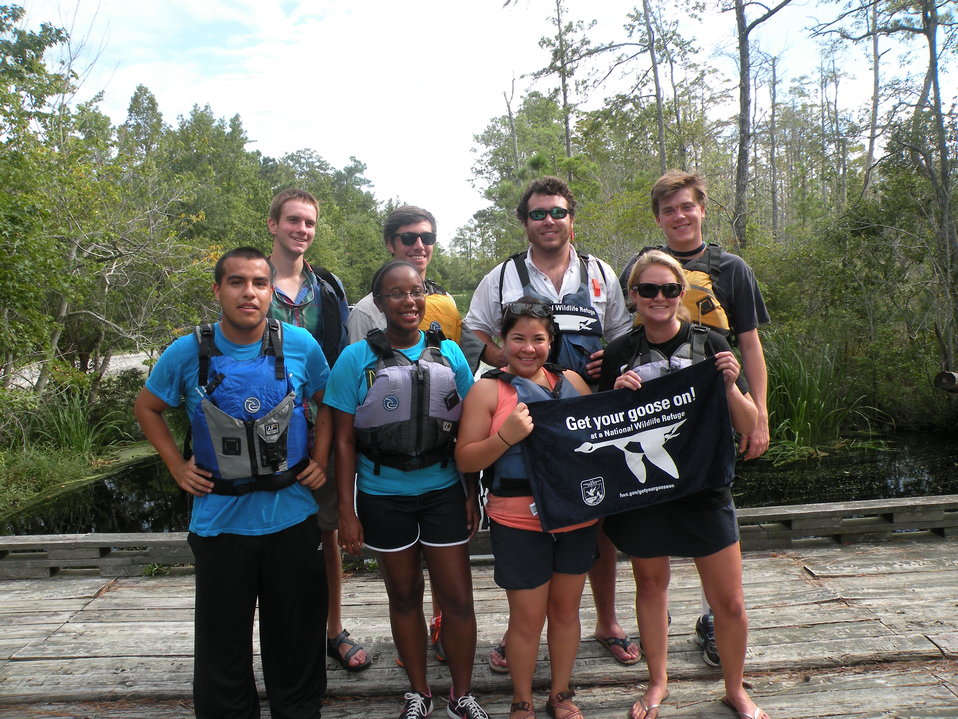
Get Your Goose On!

Students from NC State University Get Their Goose On! While visiting the paddling trail at ARNWR.

Ashlyn Knight/USFWS